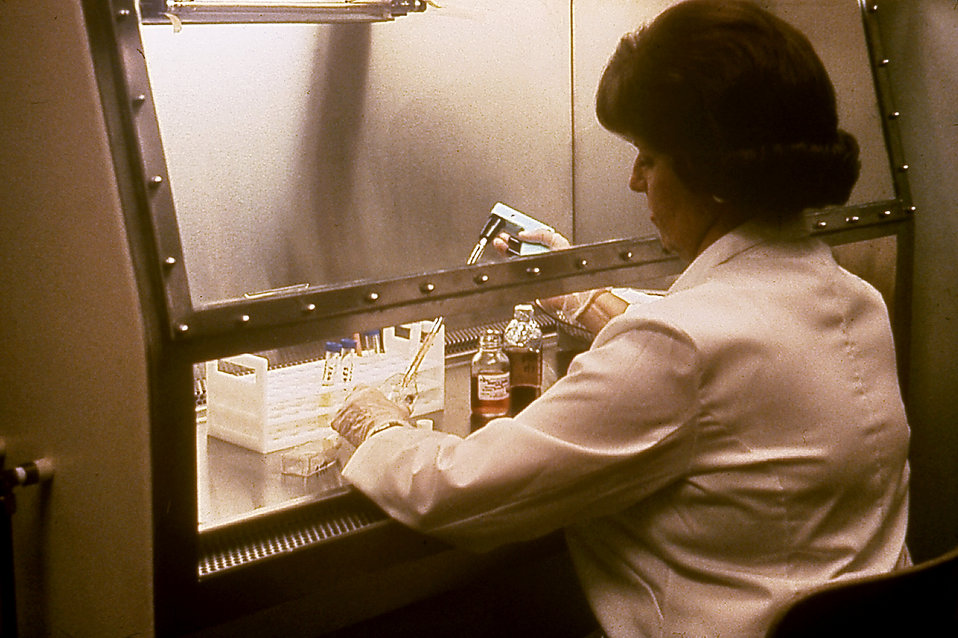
This technician is applying additional medium to an amniotic fluid cell culture under a vertical laminar-flow hood.